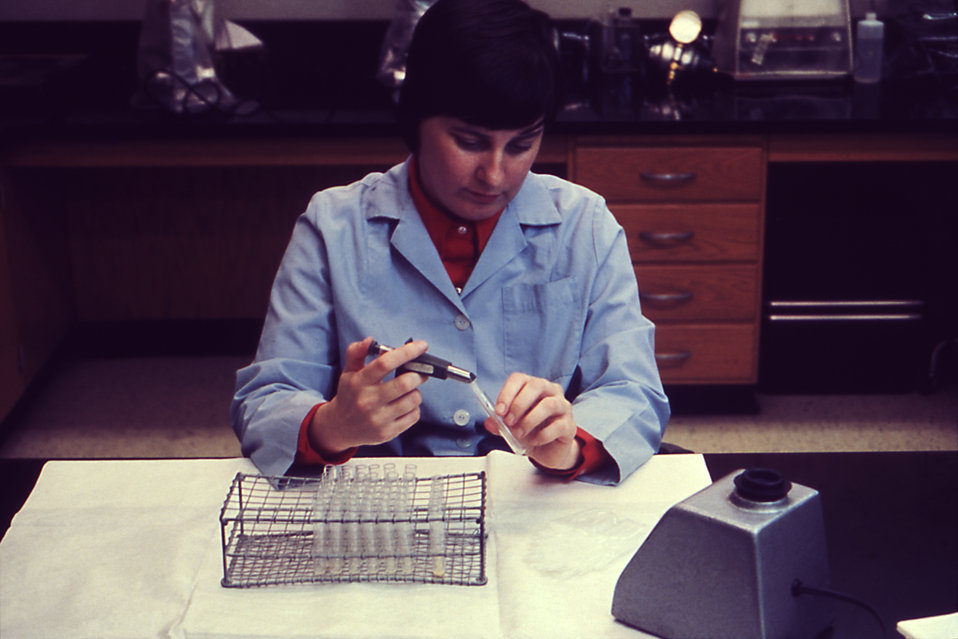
Here Martha Redus is practicing appropriate laboratory technique while conducting tests for L. pneumophilia.